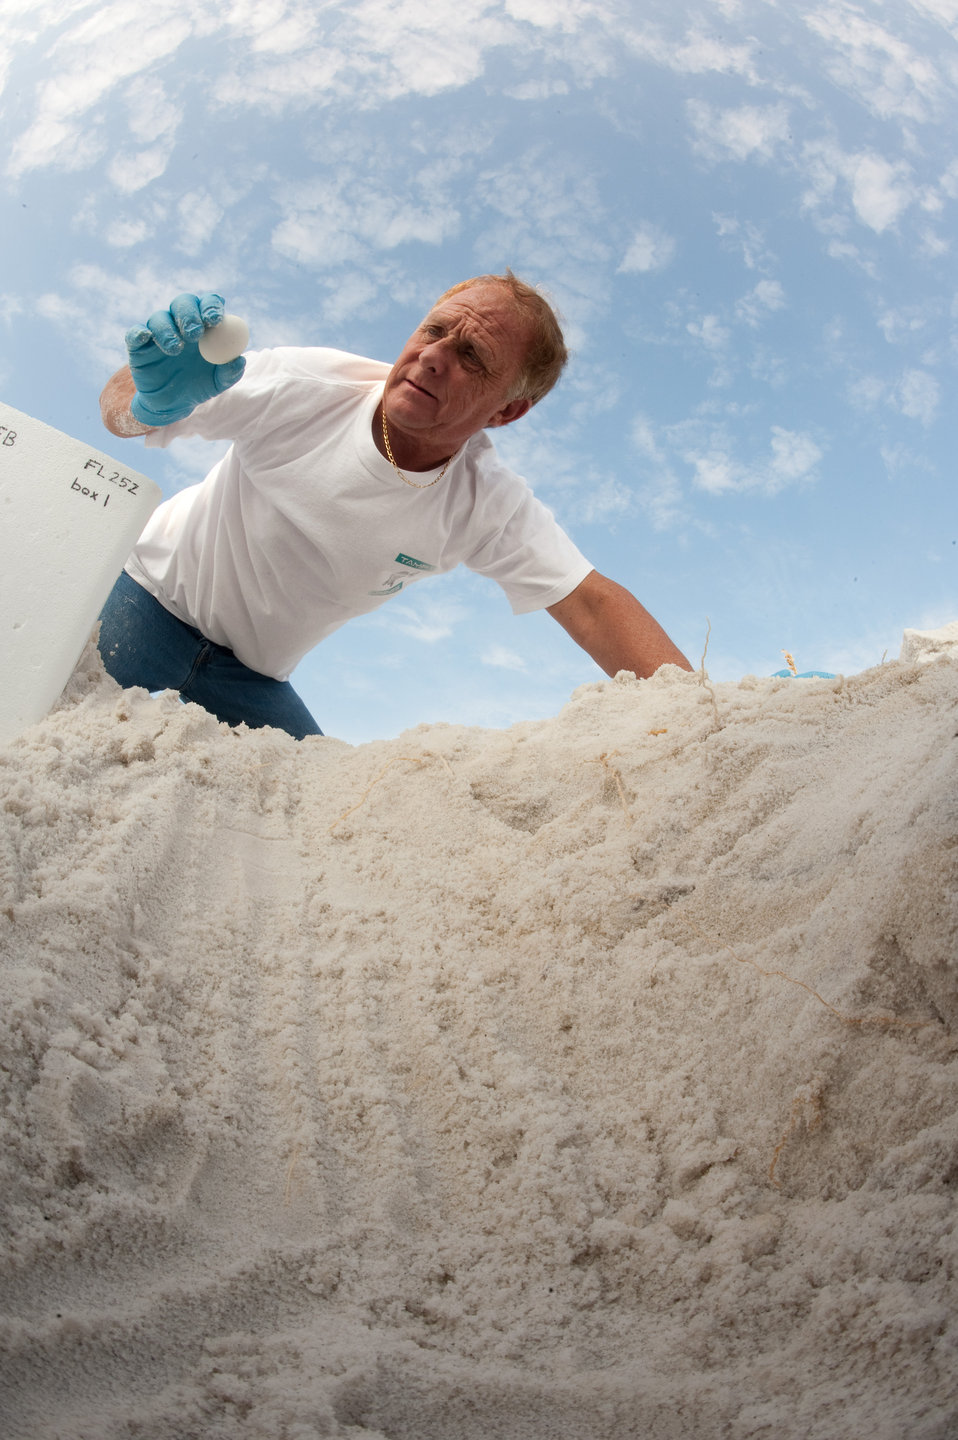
Turtle Eggs avoid Gulf Oil Danger

The honor of lifting the last of 112 Loggerhead sea turtle eggs went to Bob Miller, who carefully packing the eggs into Styrofoam coolers lined with the white sand at Eglin Air Force Base, Florida, on August 9, 2010. Mr. Miller is the Sea Turtle Program Manager with the 96th Civil Engineer Squadron. Because of the critical attachment of the embryo to the inside of the egg shell, the eggs must be gently lifted with out tilting or rotating, the egg. With equal care the transportation to the Atlantic coast is equally critical. At a controlled climate facility, they will be allowed to hatch in the cooler. Wildlife technicians will then release them into the ocean. Bob Miller, a retired Navy EOD diver, an endangered species biologist has for the past 10 years been the Sea Turtle program manager and primary permittee at Eglin Air Force Base, Fla. He has also served as the program manager for the Barrier Island and Gulf of Mexico, U.S. Fish and Wildlife Service, Endangered Species Act, Section 7 Consultation; Coastal Zone Management Act, Marine Mammal Protection Act, and Coastal Barrier Resources Act.